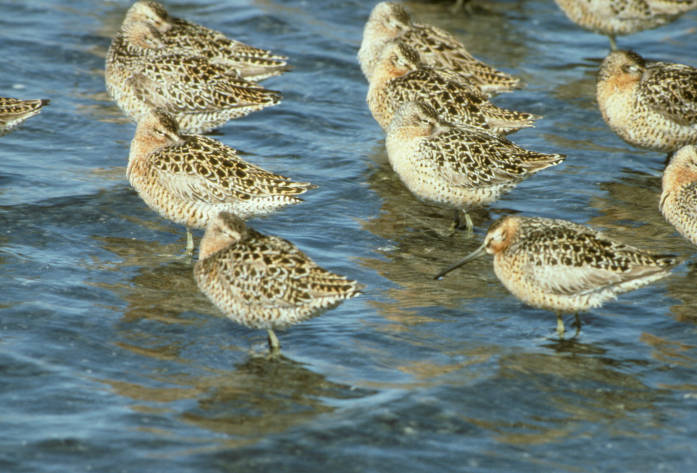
Short-billed dowitcher flock at shoreline